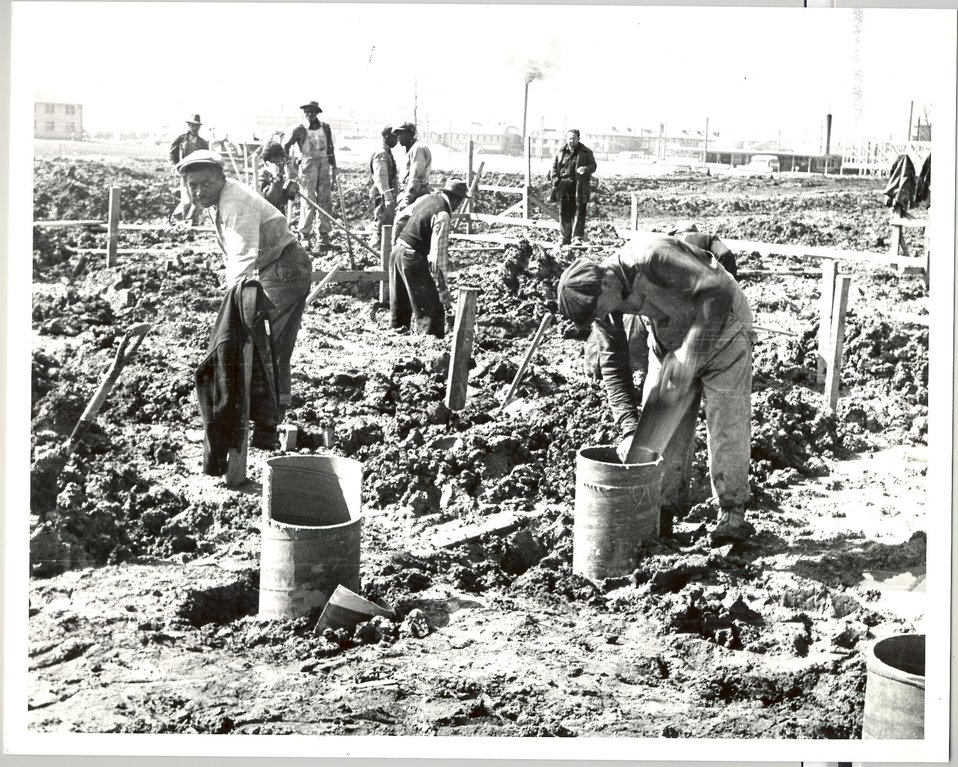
Black Construction Workers Building Foundation